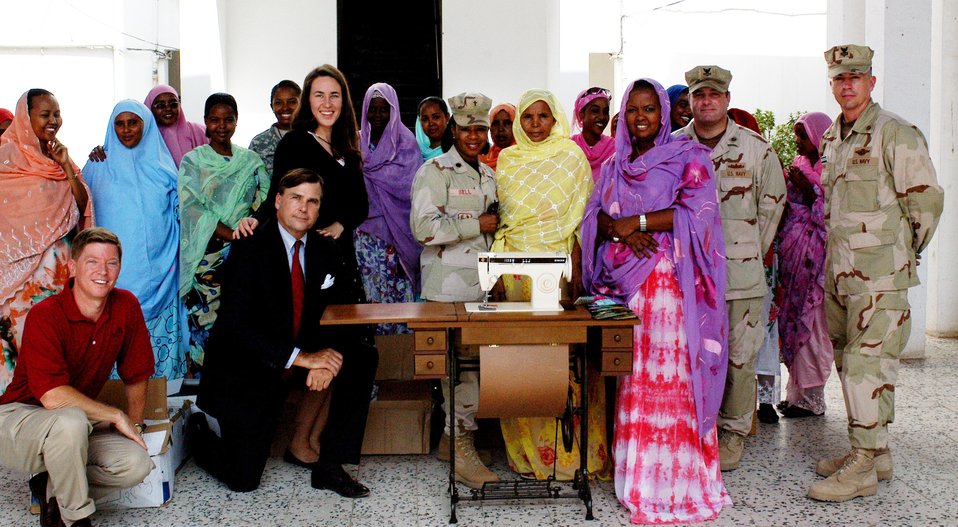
CJTF-HOA delivers supplies and educational material to students

Navy Cmdr. Joel Weaver, W. Stuart Symington and his daughter, Janey, Chaplain (Lt. Col.) Oledia Bell, and Petty Officers 1st Class Jason Bocchino, and Wayne George deliver a donation to the students and teachers of the Union National of the Djibouti Women Sept. 7 in Djibouti. Commander Weaver is the officer in charge of the Country Coordination Element - Djibouti and Mr. Symington is the U.S. ambassador to Djibouti. The donation was part of Operation Hand Clasp and included a sewing machine, sewing materials, and pens and notebooks. The Union National of the Djibouti Women provides job skills training to Djiboutian women. Members of the Combined Joint Task Force - Horn of Africa Chaplain's office delivered the donation.